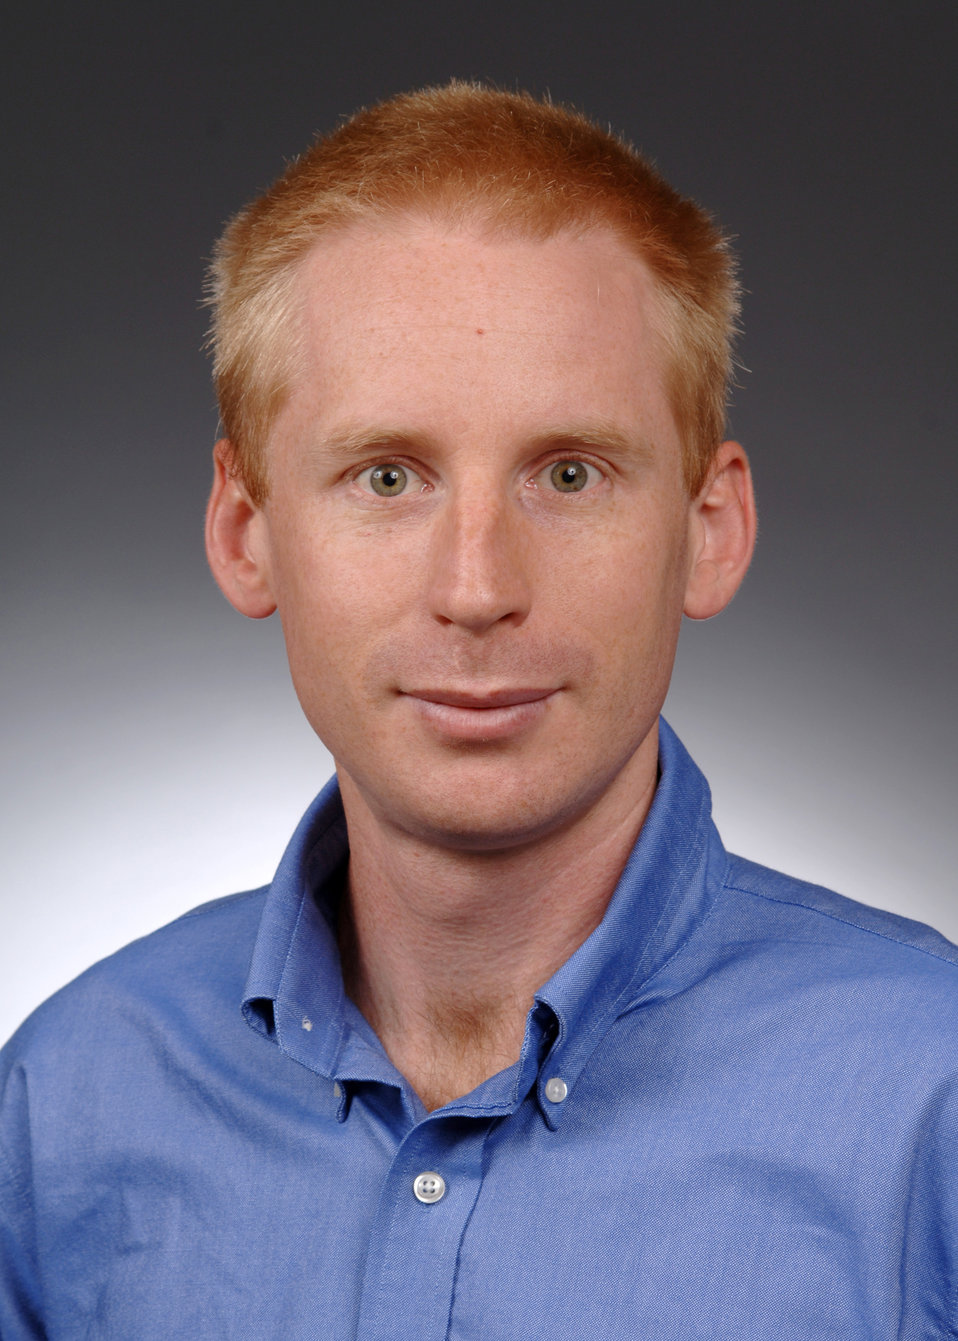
Pecase Award Winner

Ian B. Spielman